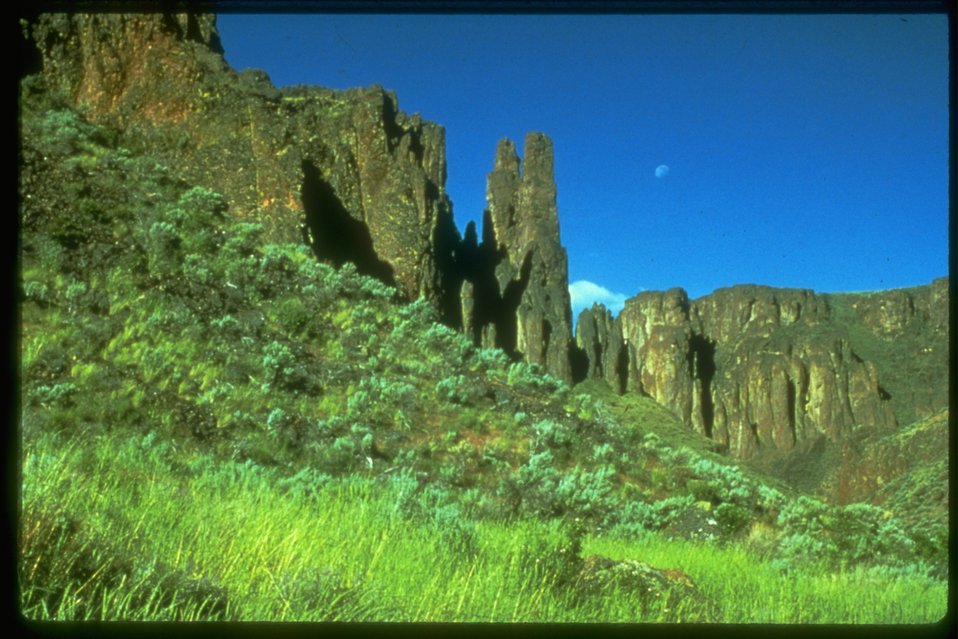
Scenic shot of large rock formations and cliffs.